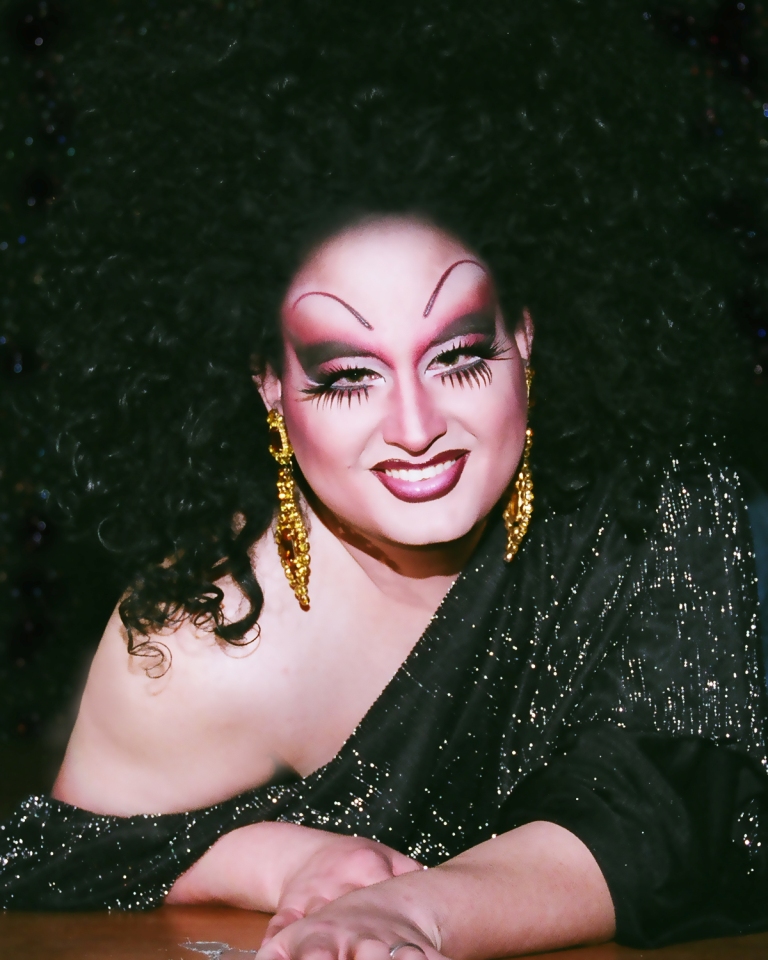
Penny Tration from Photoshoot for GayBash2007 @ Adonis The Night Club in Cincinnati, OH